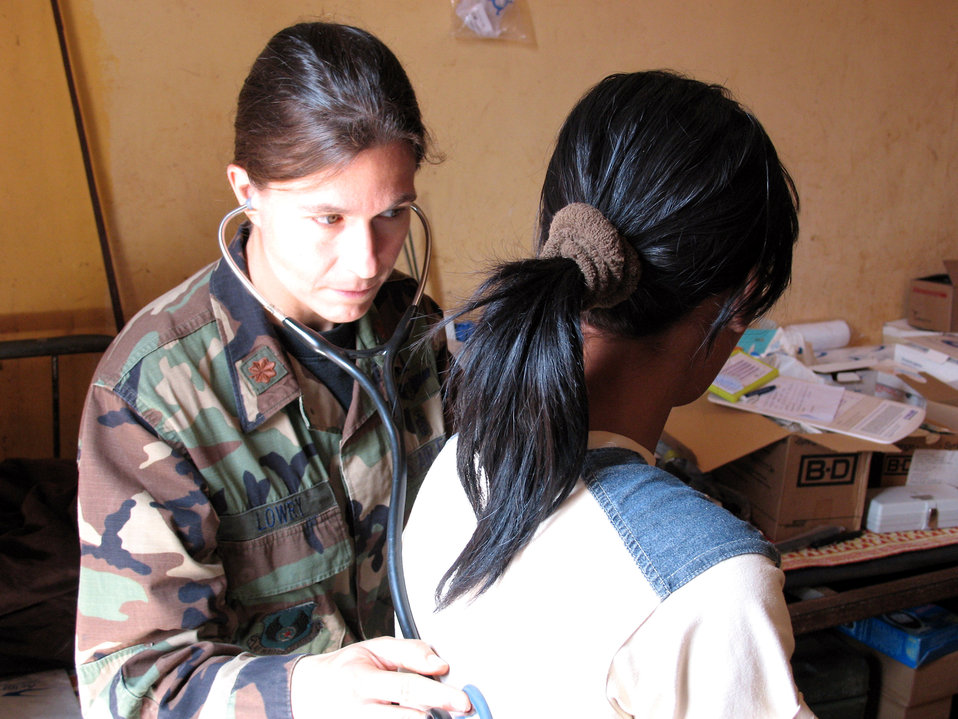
Air Force medics treat Cambodians

Maj. Cheryl Lowery checks respiratory signs of a Cambodian patient during the Medical Civil Action Program Jan. 31 in Mondol Kiri, Cambodia. Major Lowery, a native of Cheyenne, Wyoming, sees close to 100 patients with various ailments a day during the Medical Civil Action Program. She is in charge of the primary care clinic at Brooks City-Base, Texas.